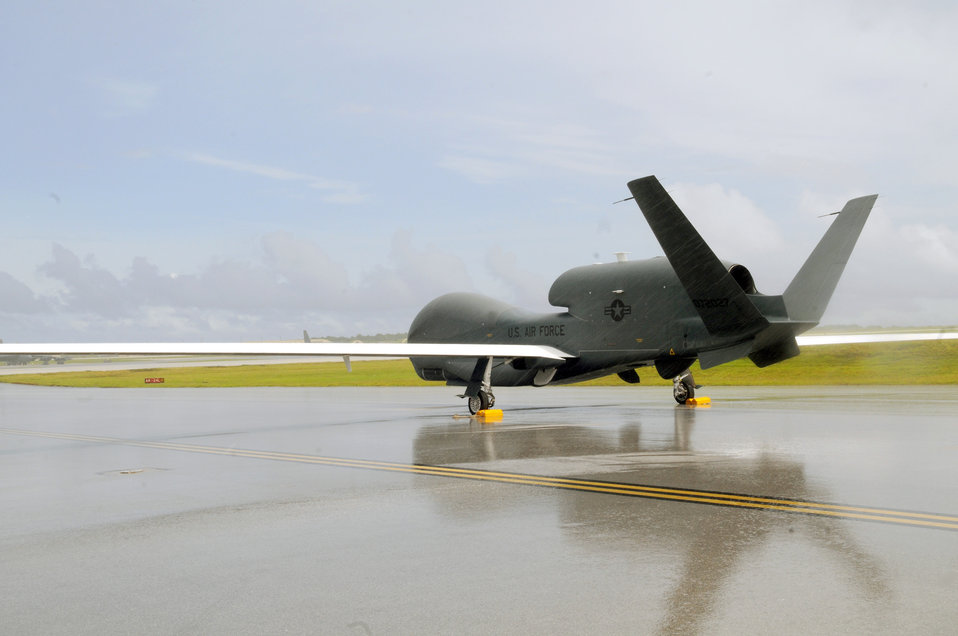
Global Hawk's first flight

An RQ-4 Global Hawk is ready for its first flight Oct. 7, 2010, at Andersen Air Force Base, Guam. This would be its first takeoff since its arrival Sept. 20, 2010. The RQ-4 is the only permanently stationed aircraft on Andersen AFB.